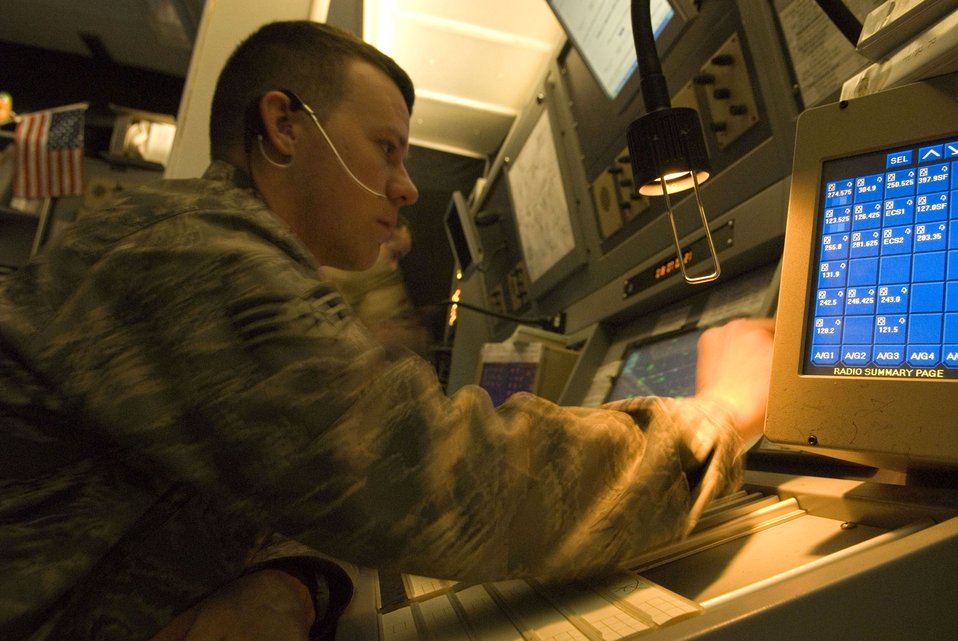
Directing traffic

Senior Airman Doug Richardson aids the center controller from the center assist controller seat as they monitor aircraft Jan. 18 at Balad Air Base, Iraq. The assist controller communicates with forwarding operating bases throughout Iraq, allowing the center controller to focus on communications with aircraft. Airman Richardson is a 332nd Expeditionary Operation Support Squadron air traffic controller deployed from Luke Air Force Base, Ariz.